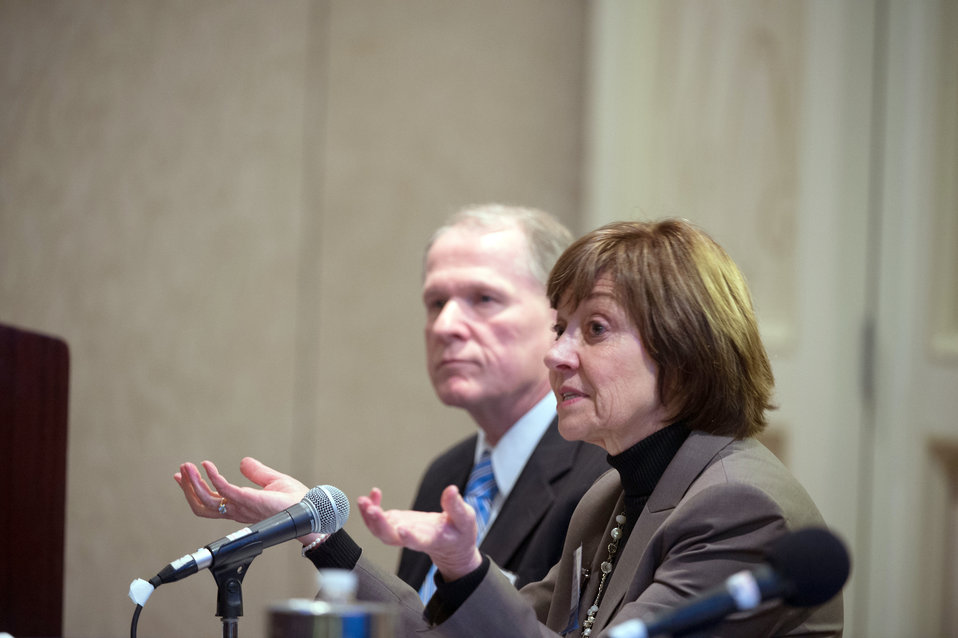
Secretary of California Department of Food and Agriculture Karen Ross speaks at the panel on Protecting U.S. Animal and Plant Health from Invasive Pests at the 2014 Agricultural Outlook Forum on Thursday, Feb. 20, 2014 in Arlington, VA. The panel discussed how the U.S. Department of Agriculture (USDA) is protecting U.S. agricultural health from invasive pests in times of diverging stakeholder interests and constraining resources. The session focused on USDA’s collaborative work with States, industries, and international trade. USDA's Animal and Plant Health Inspection Service (APHIS) Administrator Kevin Shea sits to left). USDA’s annual Agricultural Outlook Forum brings together the agricultural community to discuss policy, trade, science, rural development, and the economic outlook for the coming year. The Forum also focuses on forestry, health and nutrition issues, and the changing dynamics and face of rural America.